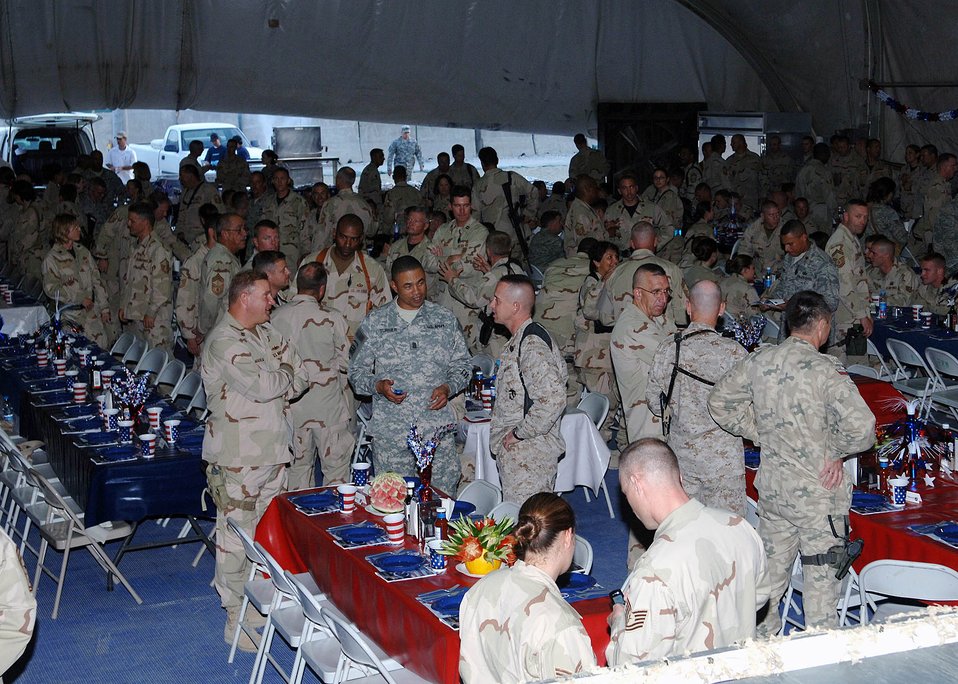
Bagram Airmen celebrate Air Force's 60th birthday

Soldiers, Sailors, Aimen and Marines were in attendance for the Air Force 60th Anniversary Ball held Sept. 8 at Bagram Air Base, Afghanistan. The multiservice crowd had dinner and watched videos highlighting the past, present and future roles of the Air Force.